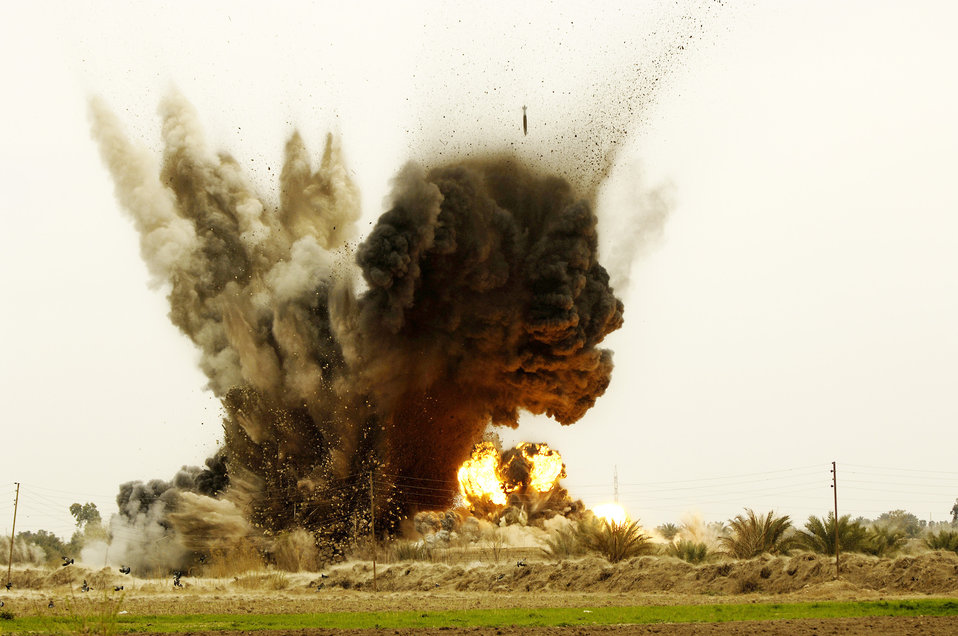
Command, control relationships critical to close-air-support mission

Six guided bomb units dropped from a B-1B Lancer and cleared by Senior Airman Joseph Aton strike an al-Qaida torture house and prison in 2008 in northern Zambraniyah, Iraq.